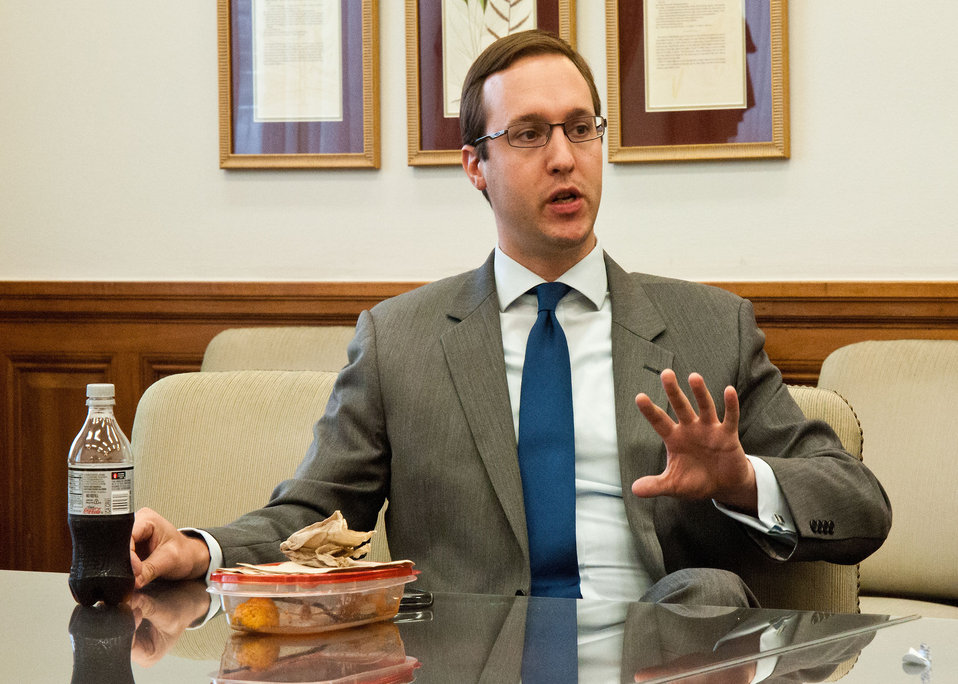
U.S. Department of Agriculture (USDA) Scheduling Deputy Director Toby Osherson had the opportunity with other USDA employees to discuss the roles they play within the Department at a Brown Bag Lunch held with Agriculture Secretary Tom Vilsack in Washington, D.C. on Wednesday, Sept. 26, 2012. Secretary Vilsack holds the occasional Brown Bag Lunches to gain information and knowledge to assist in the administration of the affairs and programs of the Department, and to thank the employees for their diligent work to the Department and as public servants.